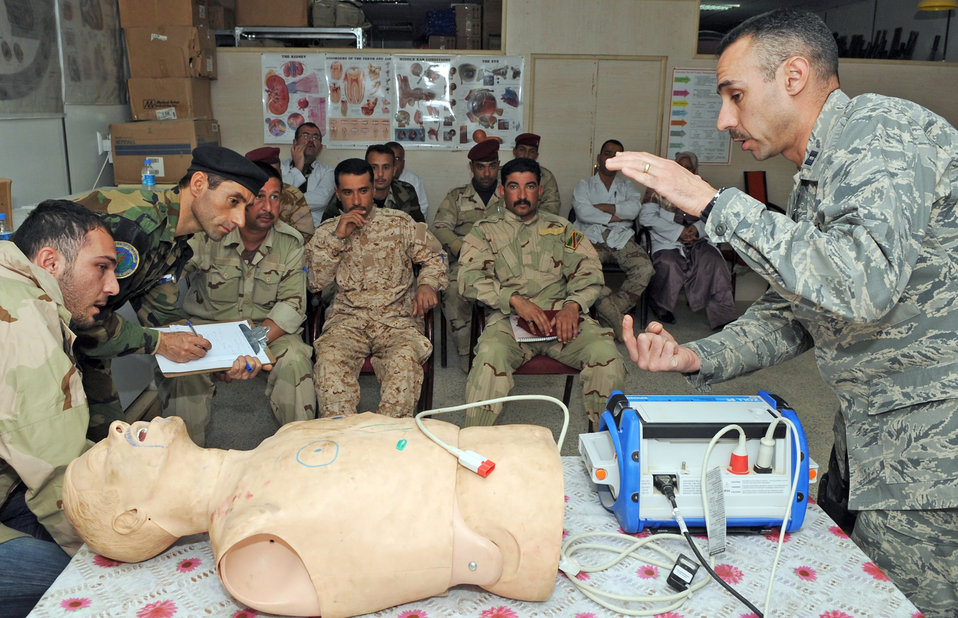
Kirkuk Airmen train Iraqi medics

Capt. Adam Christopher and Staff Sgt. Andrew Salas teach Iraqi medics how to use a defibrillator Feb. 16, 2010, at Kirkuk Air Base, Iraq. This training is part of the Expert Field Medical Batch four-week course offered to Iraqi medics at the K-1 Iraqi medical clinic in order to provide the experience they will need in real-world situations. Captain Christopher and Sergeant Salas are assigned to the 506th Expeditionary Medical Squadron.